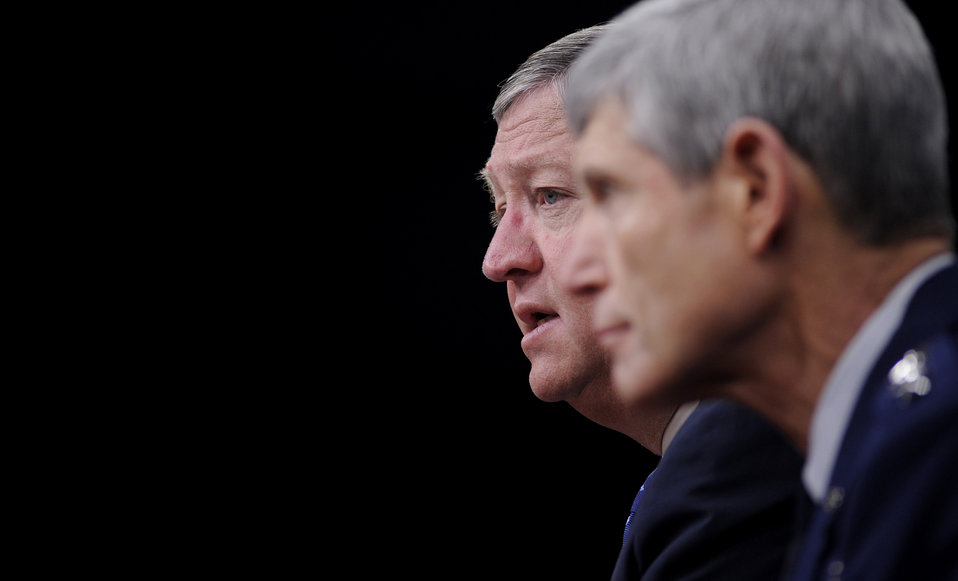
AF Force Structure Overview

Secretary of the Air Force Michael Donley and Air Force Chief of Staff Gen. Norton Schwartz explain the Air Force's Force Structure overview during a Pentagon press briefing on Feb. 3, 2012.